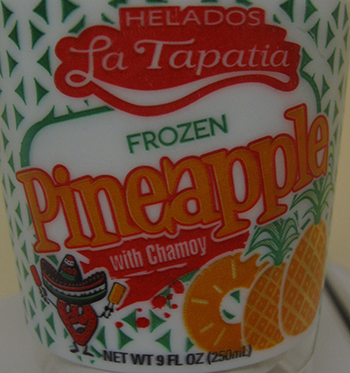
RECALLED – Ice cream products

March 19, 2014 – Product Recall – Helados La Tapatia, Inc. Recalls Products Because of Possible Health Risk.